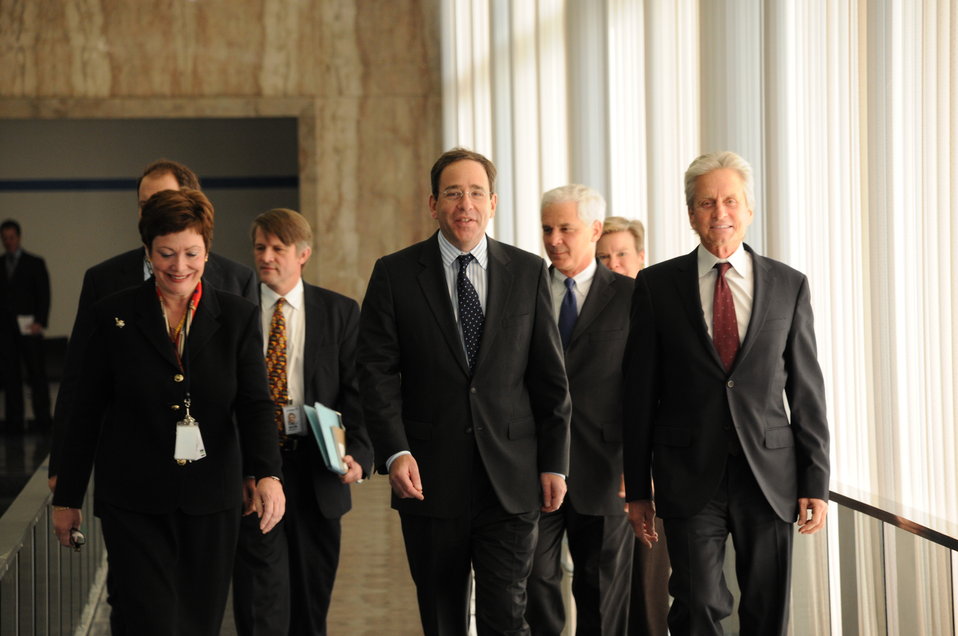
Actor Michael Douglas, With Deputy Secretary Nides and Under Secretary Tauscher, Visits the State Department

Actor Michael Douglas, right; accompanied by Deputy Secretary of State Thomas Nides, center; and Under Secretary of State for Arms Control and International Security Ellen Tauscher, left; visits the U.S. Department of State in Washington, D.C., on November 3, 2011.